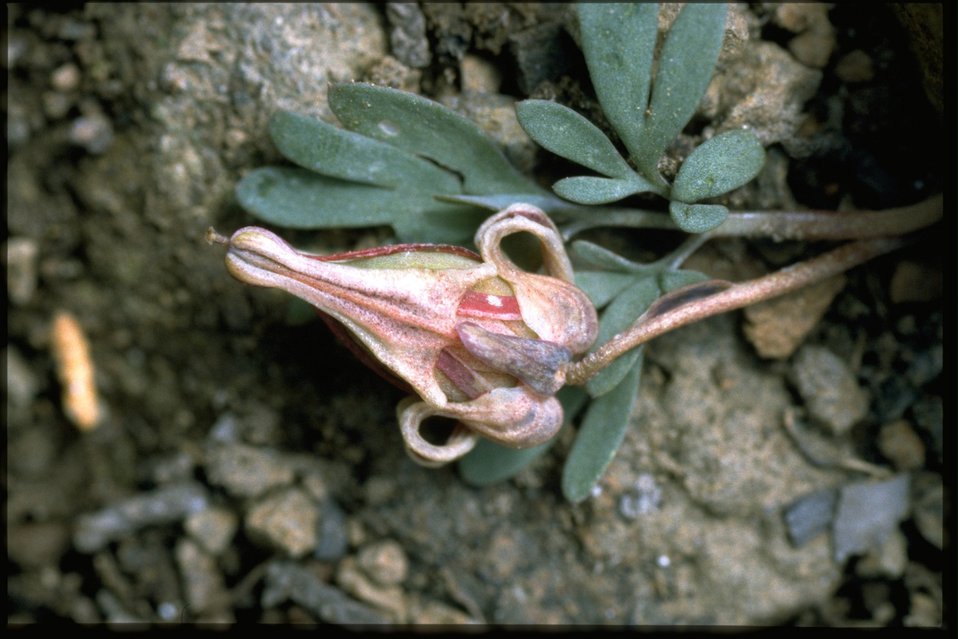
Closeup shot of Steer's Head, Dicentra Uniflora, wildflower.